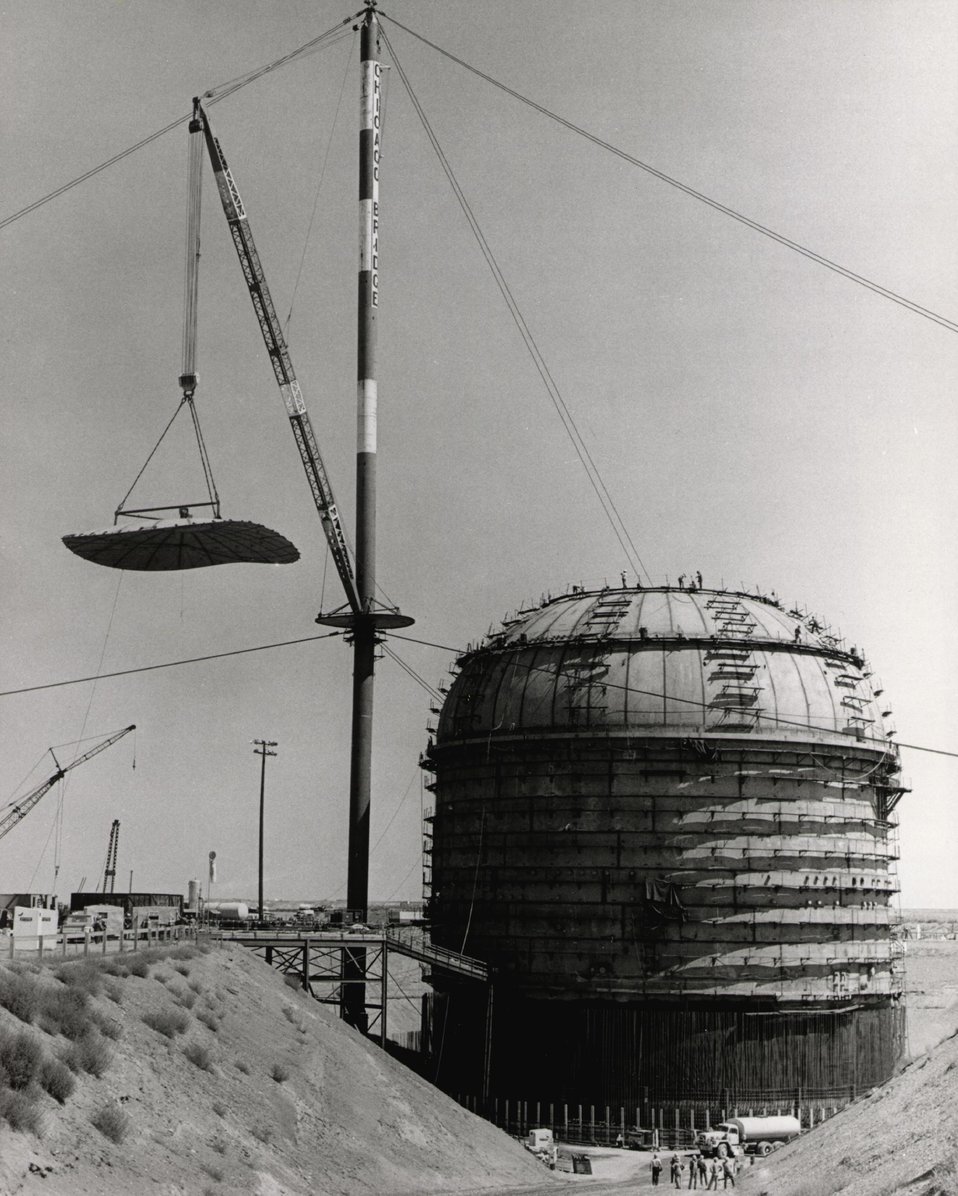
RICHLAND, WASHINGTON...This 70-ton dome was placed atop the Atomic Energy Commission's Fast Flux Test Facility (FFTF) containment vessel near Richland, Washington. c.1972.